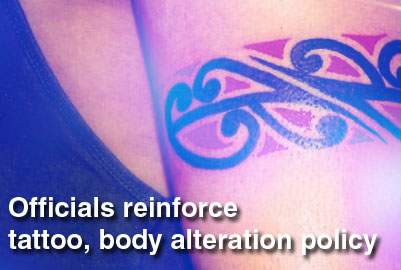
Air Force officials reinforce tattoo, body alteration policy

Air Force senior leaders have taken steps to ensure Air Force dress and personal appearance standards are applied consistently across the service, and recently identified inconsistent application of the tattoo screening process following a review of more than 6,000 trainees at Basic Military Training.